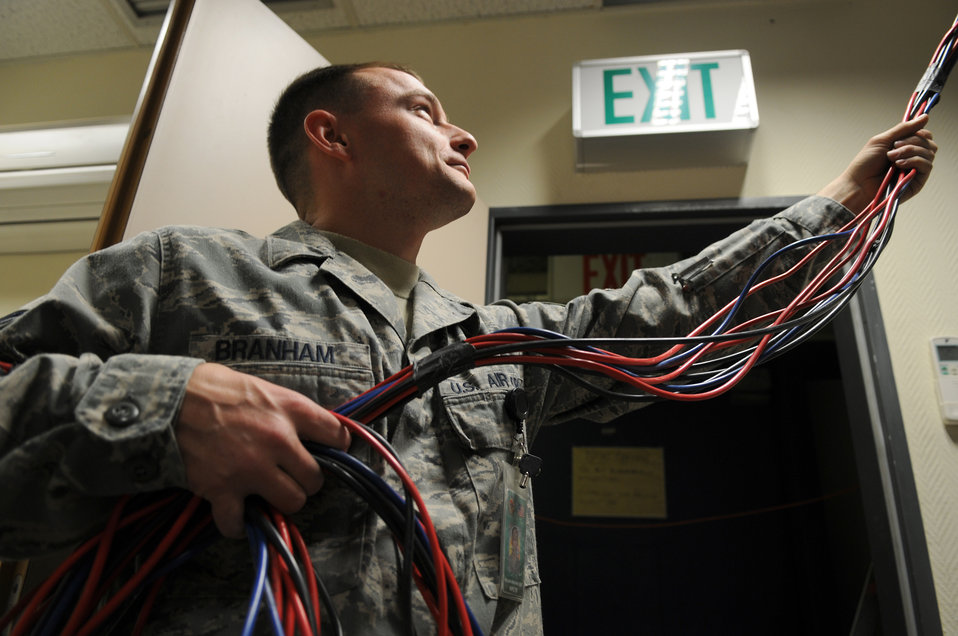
Warrior prep center

Tech. Sgt. William Branham helps remove network cable as part of a renovation project to the U.S. Air Forces in Europe Warrior Preparation Center in Einsiedlerhof, Germany. The WPC is a training compound for U.S. and coalition forces that provides live, virtual and constructive environments that are seen in downrange. The renovation is aimed at improving network infrastructure and customer service, saving nearly $250,000 annually. Sergeant Branham is a WPC network infrastructure technician.